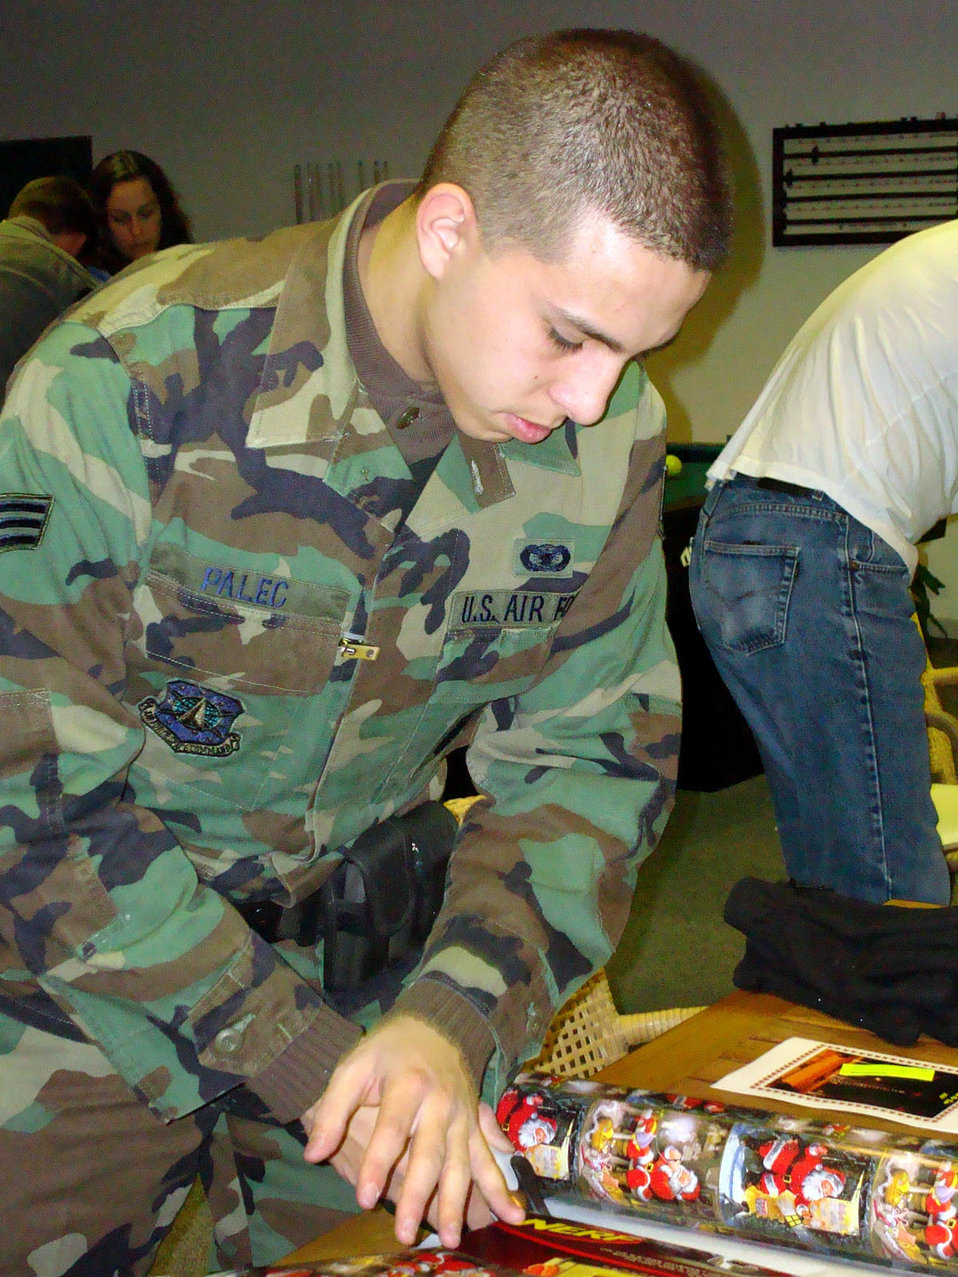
Season of giving extends throughout the year at top of the world

Senior Airman Zachary Palec, 821st Security Forces Squadron, wraps a gift for one of the children who will benefit from the base's Operation Julemand charity effort. Operation Julemand is an on-going charity drive at Thule Air Base that raises money to purchase Christmas gifts for children in four local villages.